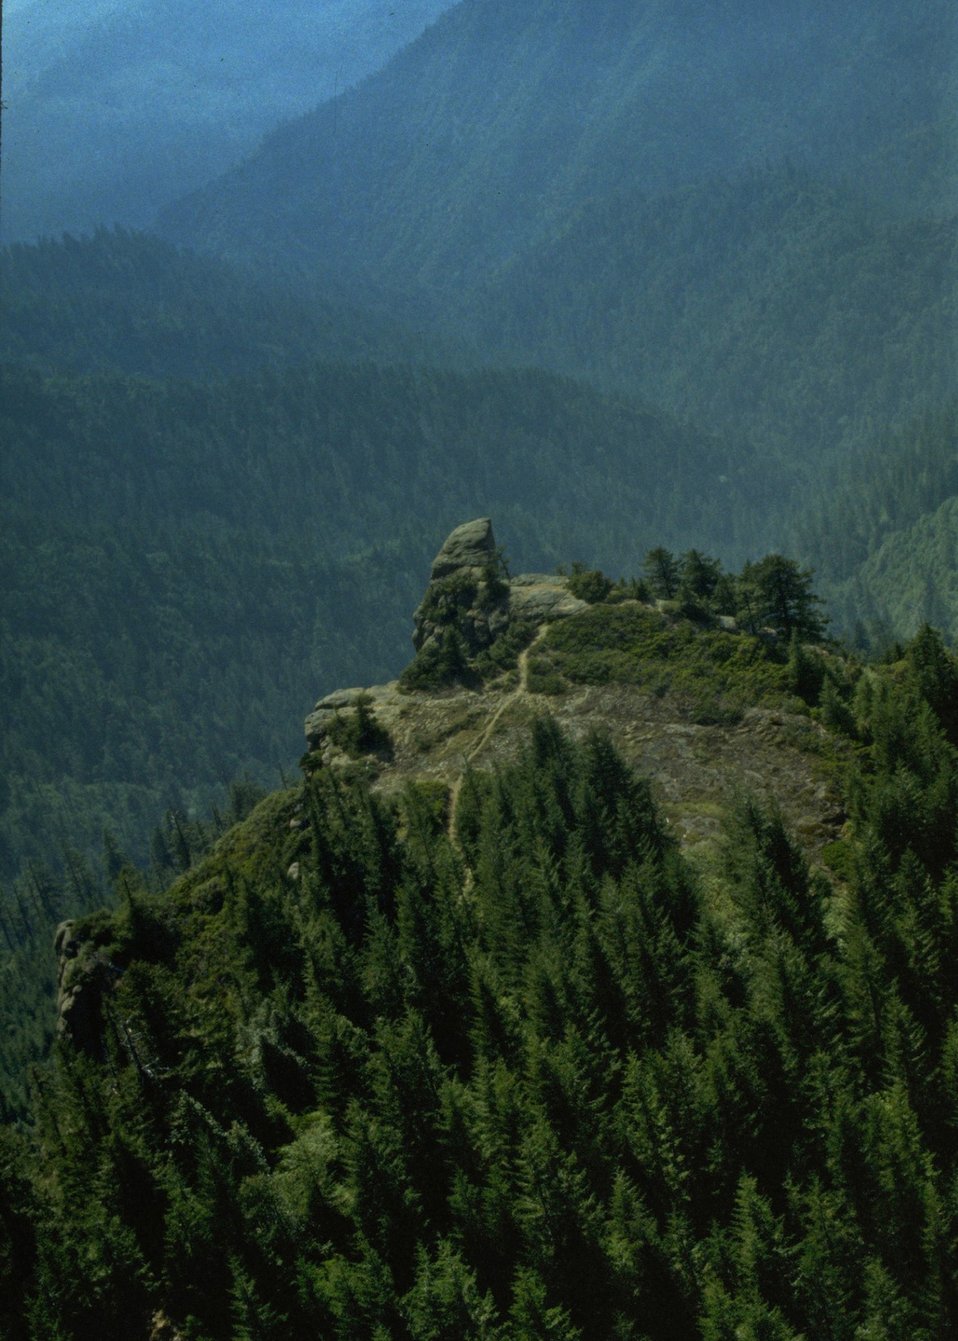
Wilderness: Hanging Rock Wild Rogue.